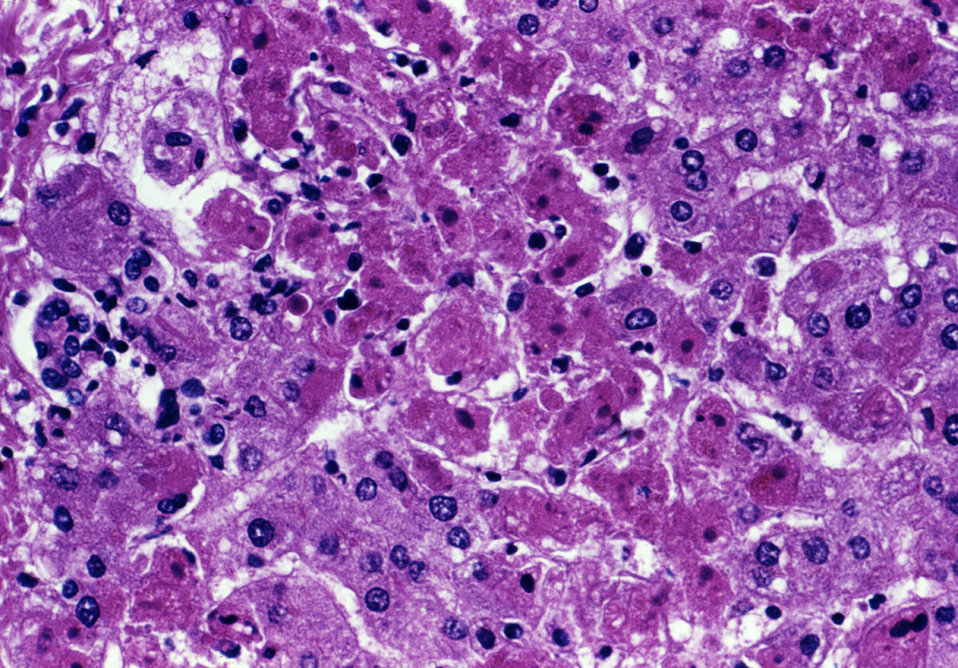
This photomicrograph revealed the cytoarchitectural histopathologic changes detected in a liver sample from a Marburg patient (case #1) who was treated in Johannesburg, South Africa in 1975.